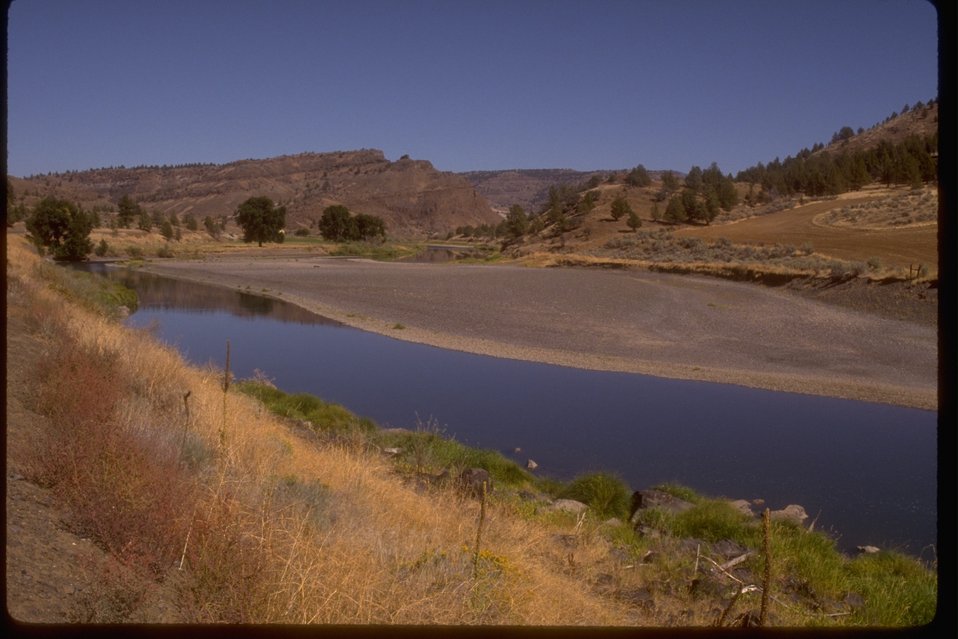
John Day River Series.